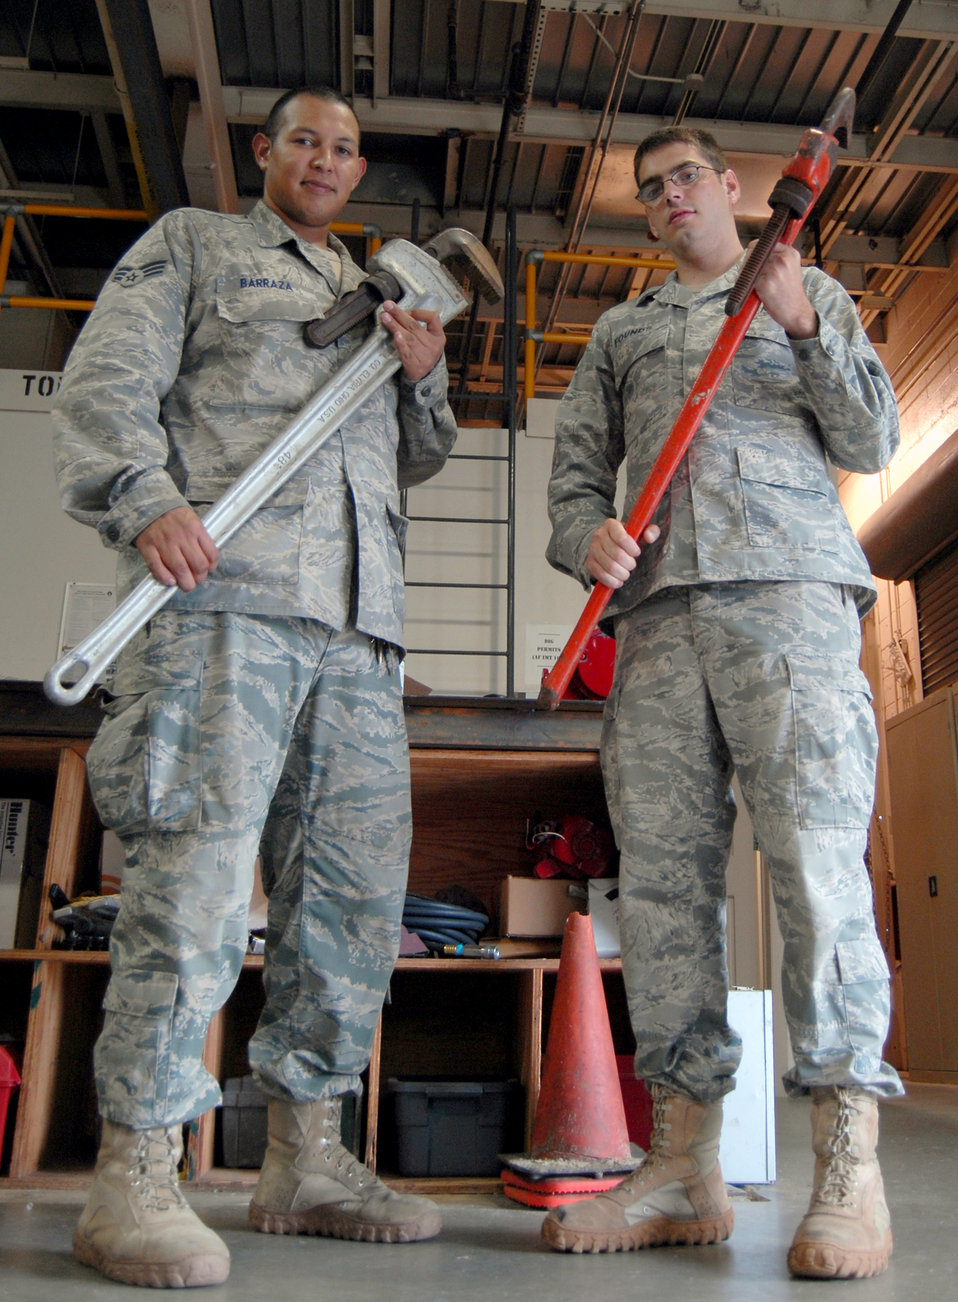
Plumbers keep the flow

Senior Airman Richard Barraza (left) and Senior Airman James Founds stand with tools in hand, prior to going to a work site July 15, 2010, on Pope Air Force Base, N.C. Airmen Barraza and Founds are 43rd Civil Engineer Squadron plumbers. They are responsible for maintaining and repairing water delivery systems for every facility on Pope AFB.